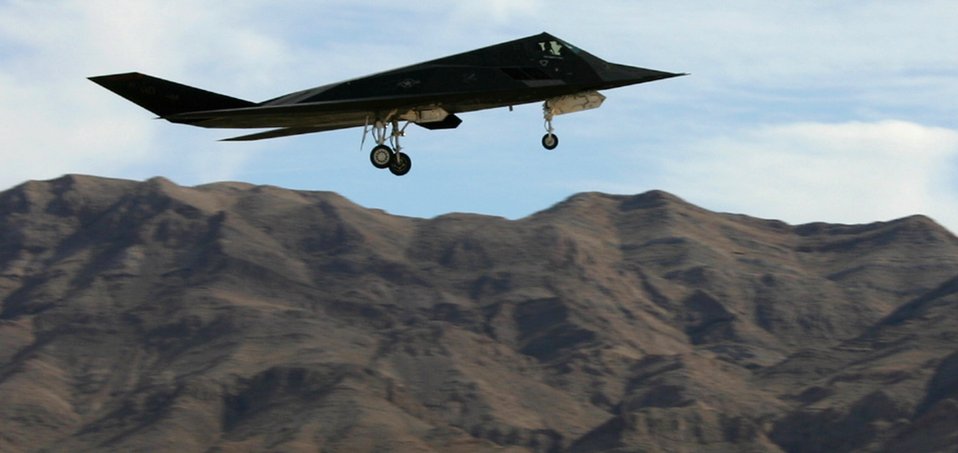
Red Flag turns stealthy

An F-117 Nighthawk lands after a Red Flag mission Feb. 12 at Nellis Air Force Base, Nev. All three of the Air Force's stealth aircraft models -- the B-2 Spirit, F-117 and F-22 Raptor -- are taking part in Red Flag, which sharpens aircrews' warfighting skills in realistic combat situations. Crews are flying missions during the day and night to the nearby Nevada Test and Training Range where they take part in highly realistic aerial combat. The Air Force and Navy, along with Australia and the United Kingdom militaries, are participating in this Red Flag.